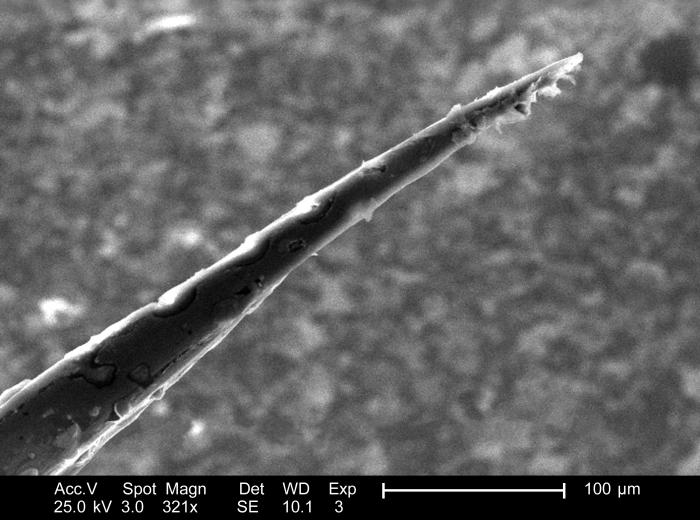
From a lateral perspective, and under a moderately high magnification of 321x, this scanning electron micrograph (SEM) depicted the some of the ultrastructural morphologic details seen at the distal tip of the stinger apparatus of an unidentified hymenopteran insect found deceased in the Decatur, Georgia suburbs. The Order of Hymenoptera includes bees, wasps, ants, and sawflies. Judging from the smooth nature of this stinger shaft, this was probably something other than a honeybee, whose stinger shaft would have displayed more defined, broader barbs at the distal tip. The smoother nature of the shaft, would have allowed the stinger to have been easily extracted without it becoming inextricably embedded when it was penetrating a victim's skin, as is the case with the Western honeybee, Apis mellifera.